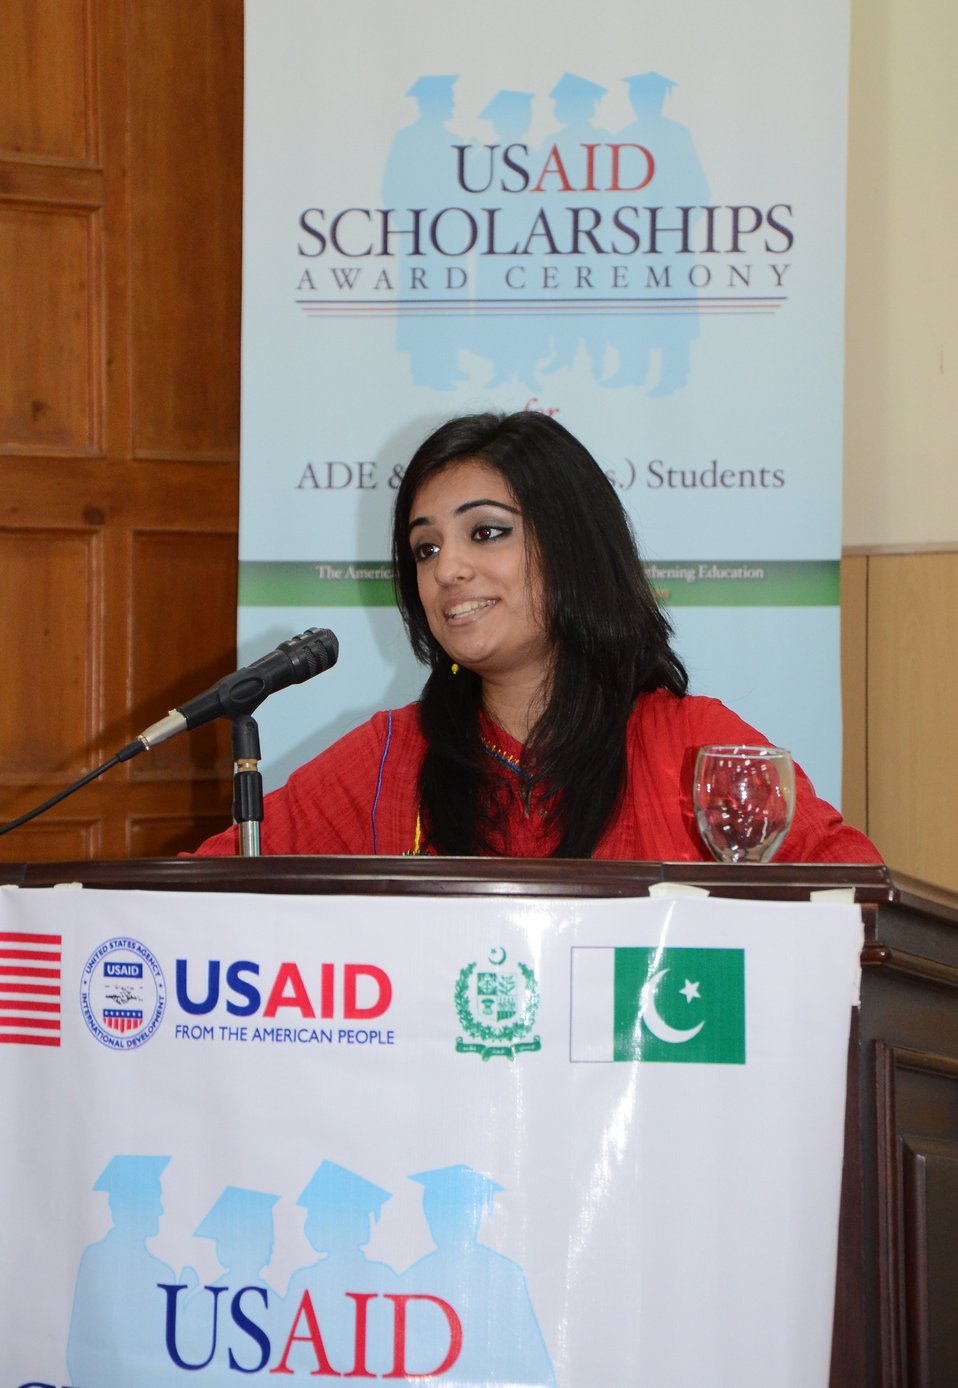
A USAID schoalrship recipient from Fatima Jinnah Women University

The U.S. Agency for International Development (USAID) through its Teacher Education Project awarded scholarships to 147 talented students enrolled in the recently introduced two-year Associate Degree in Education (ADE) and four-year Bachelor’s Degree in Education programs in Punjab.